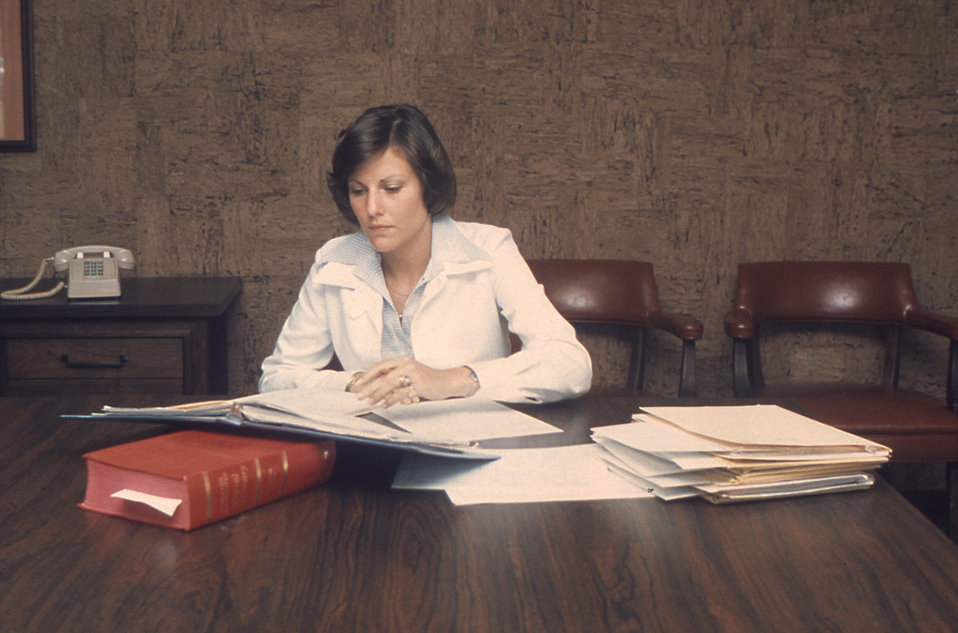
This historic image depicted a Centers for Disease Control (CDC) public health adviser working on a pilot study known as SENIC (Study on the Efficacy of Nosocomial Infection Control), which measured the accuracy of a system, designed by Robert W. Haley, M.D., that detected hospital-acquired infections through the analysis of medical records. SENIC was ultimately used to measure the change of infection rates in a random sample of U.S. hospitals. In this picture she appeared to be doing an in-line quality control analysis, by comparing the agreement of duplicate reviews of the same medical records.